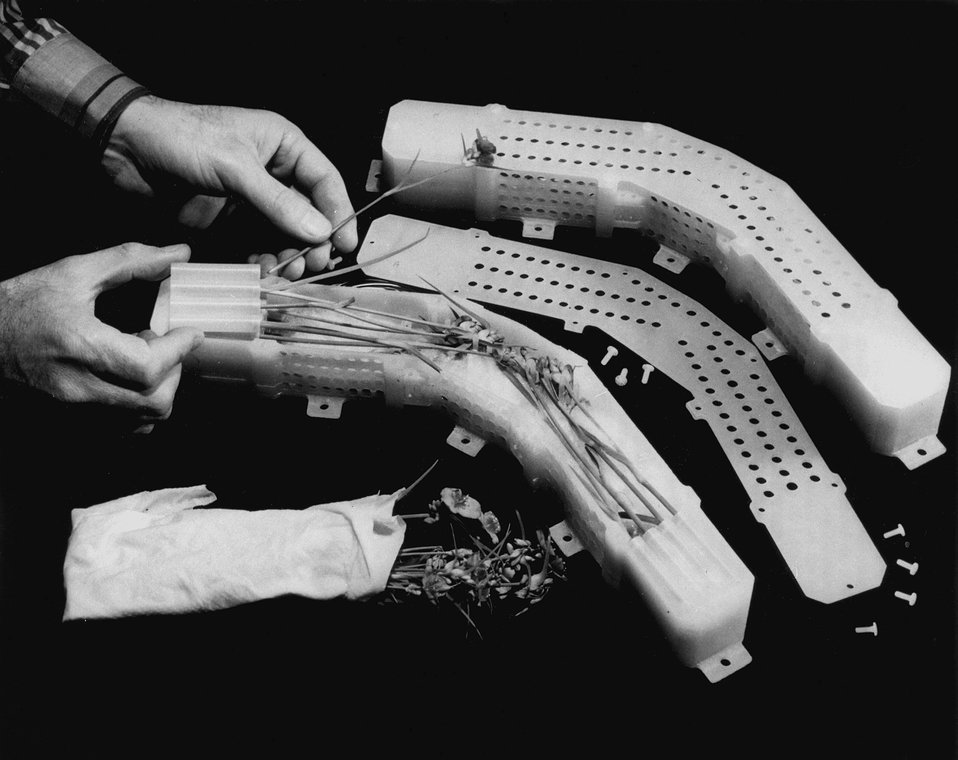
Containers in which growing Tradeseantia plants are being flown in a Brookhaven National Laboratory experiment on board the first bio satellite. c. 1967